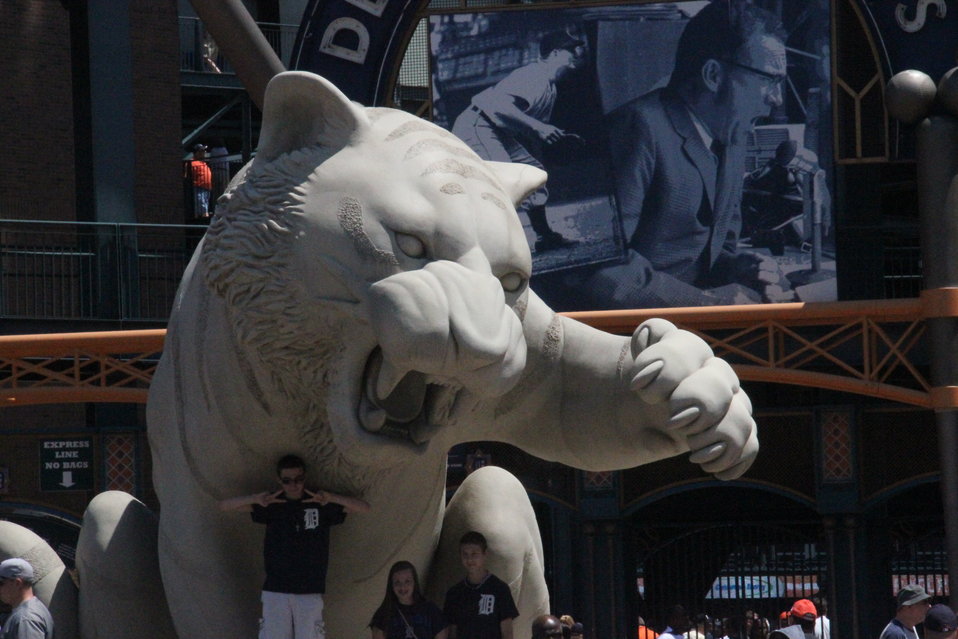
Detroit Tigers Statue